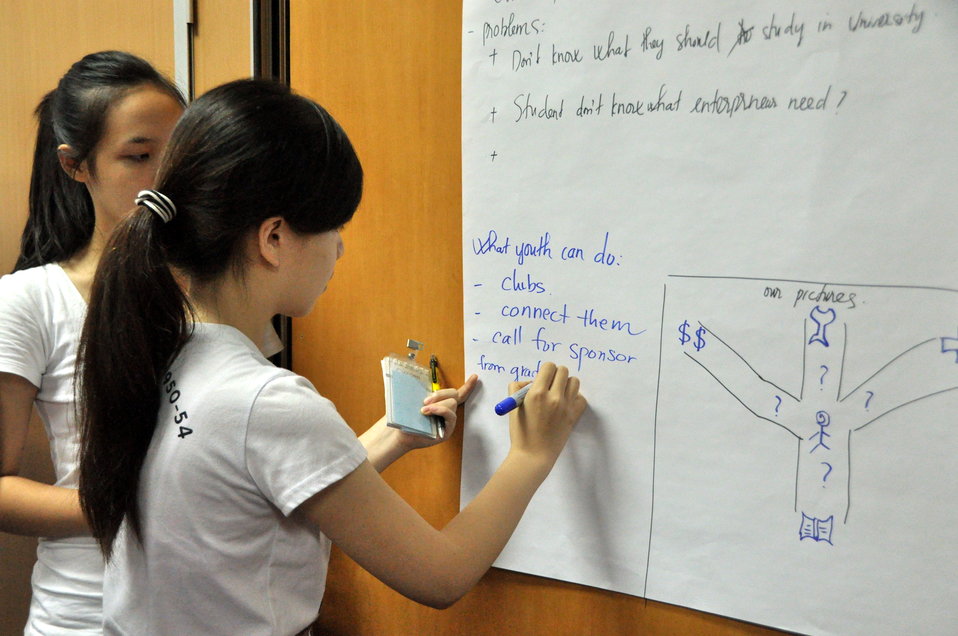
International Youth Day 2013: USAID hosts a lively discussion and group exercise on how youth can join in to advance development

Hanoi, August 12, 2013.